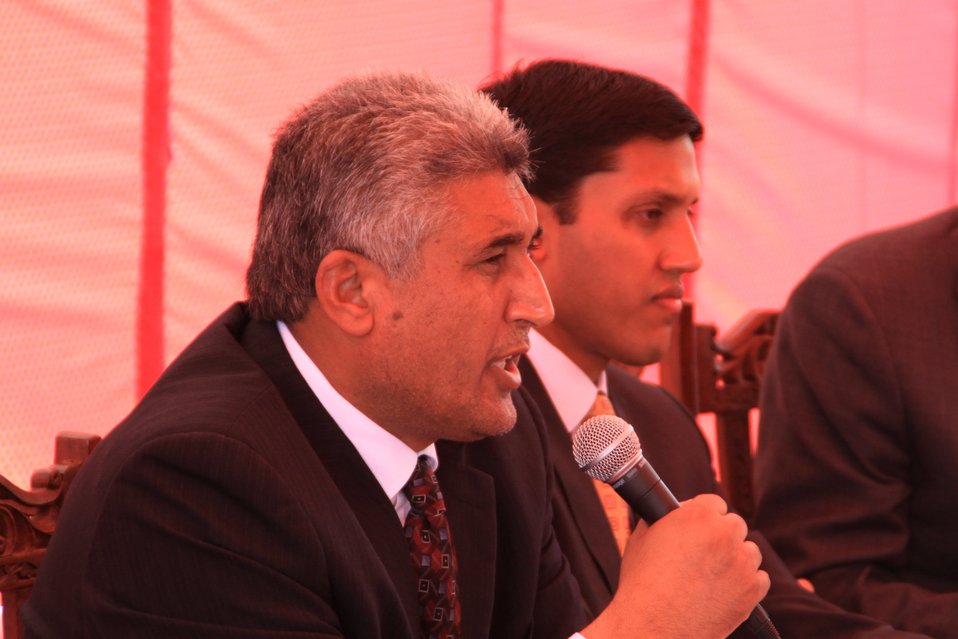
Badam Bagh Farm